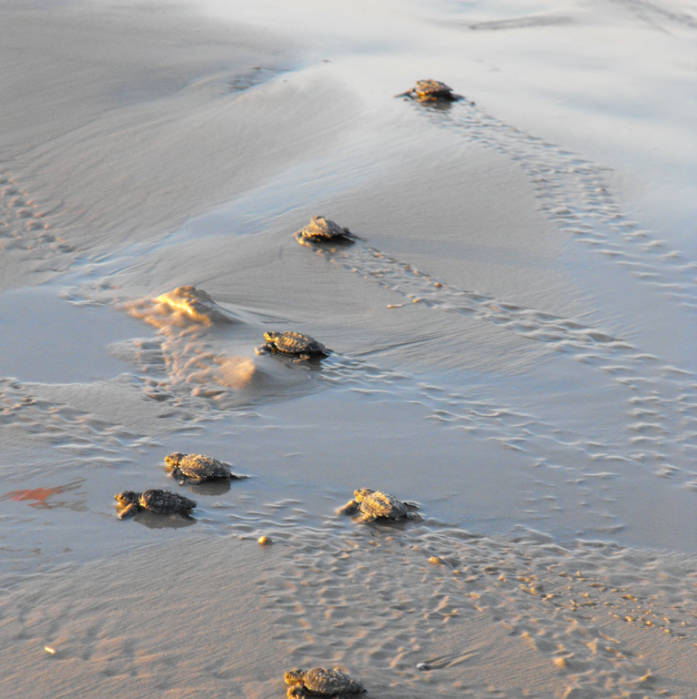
sea turtle hatchlings